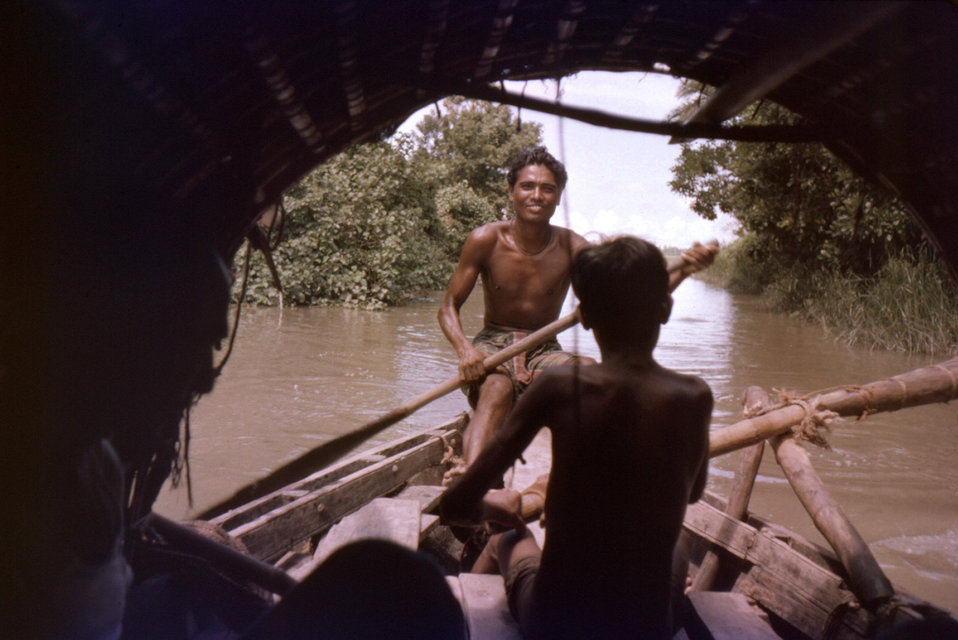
This photograph, which was captured in September, 1975, depicted a view from the inside of a country boat. The boat and its passengers were making their way along one of the Bhola Island waterway, the largest of Bangladesh's islands.